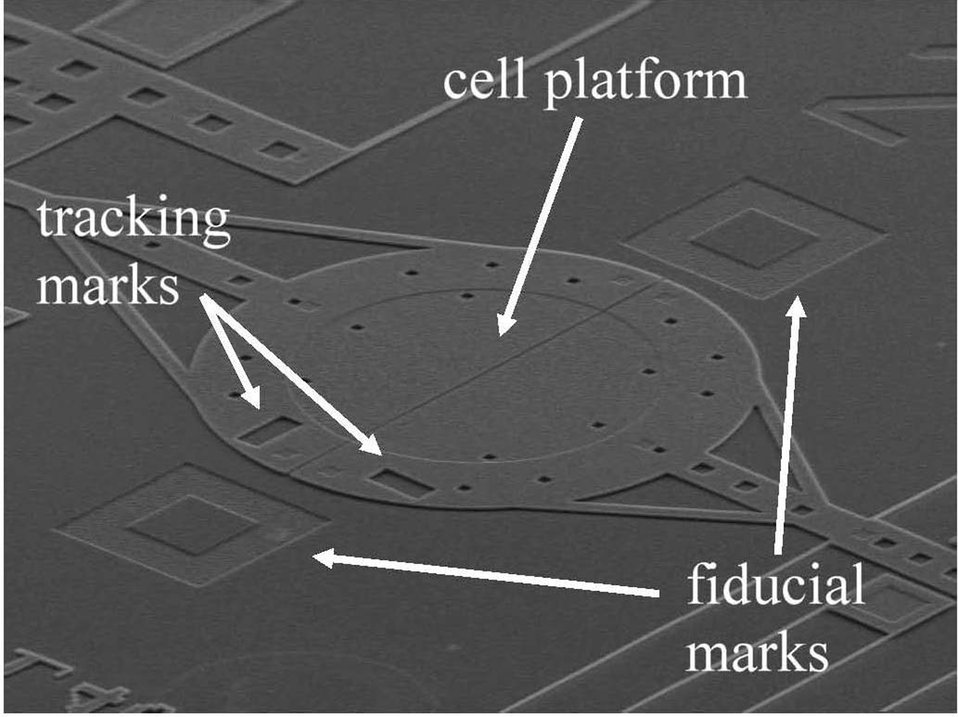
Microelectromechanical system (MEMS)

Electron micrographs of the NIST 'cell puller,' which measures the mechanical properties of a living cell. After the cell spreads and adheres to the center of the 200-micrometer-wide circular platform, half of the platform is pulled slowly away, while a sensor connected to the other half measures the force on the cell.